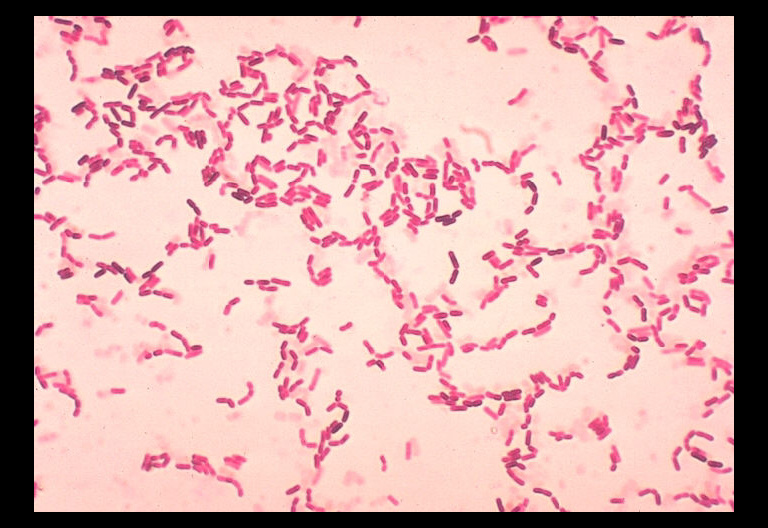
Bacillus firmus. Gram stain.